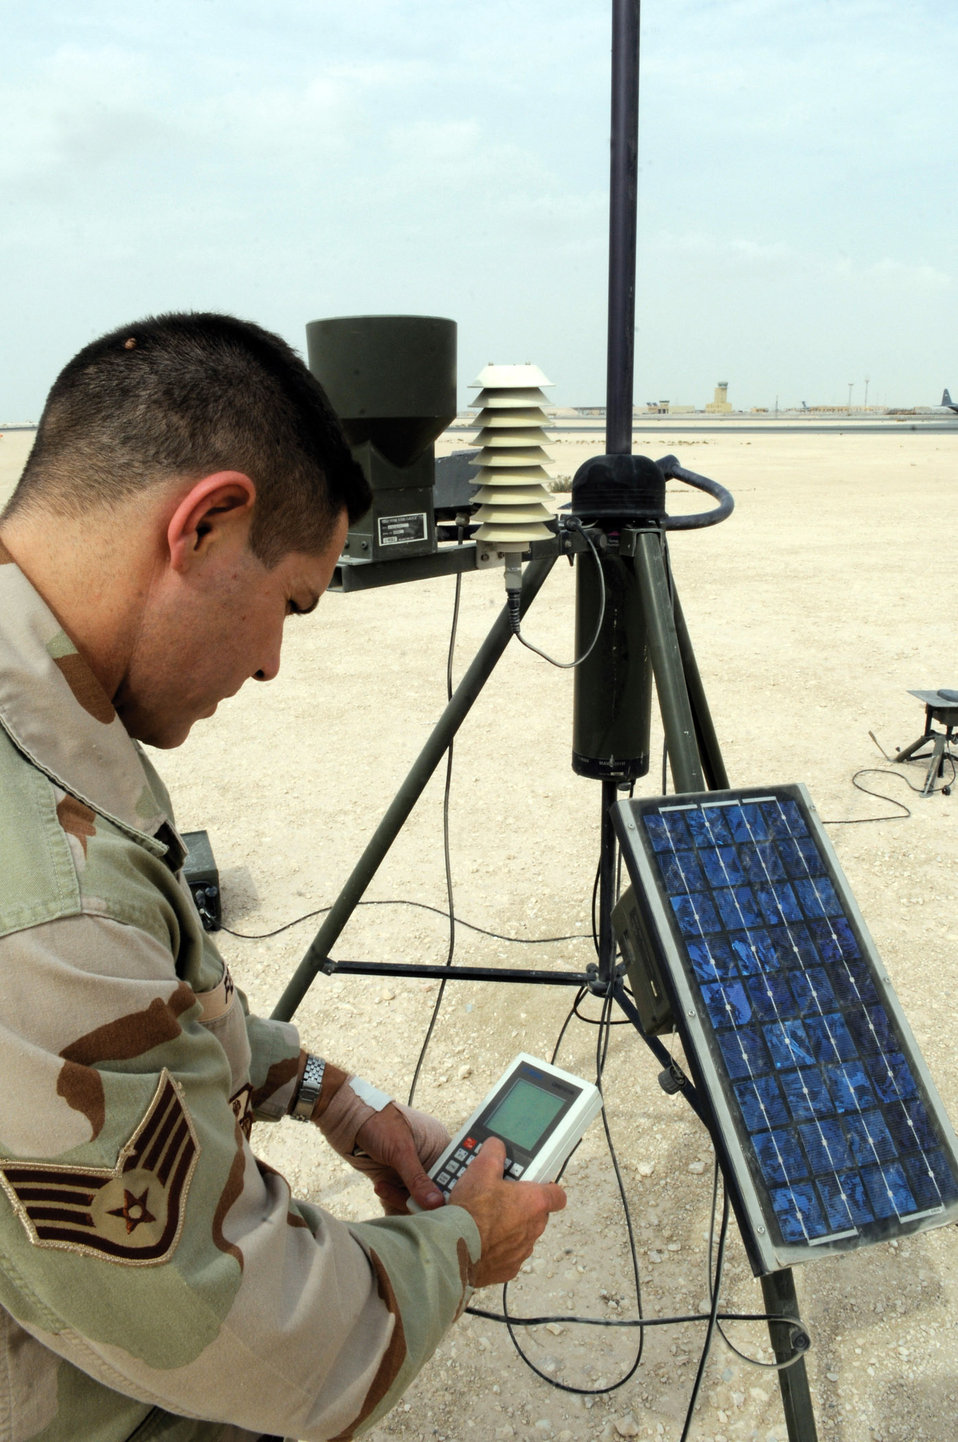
Weather flight forecasts ensure mission efficiency

Staff Sgt. Kevin Fedon, a weather forecaster assigned to the 379th Expeditionary Operations Support Squadron at an air base in Southwest Asia, checks weather readouts, including temperature, wind speed, wind direction and precipitation, at a remote weather sensor. The weather readings are put into a weather model to help predict weather patterns and are used for daily reports to aircrews preparing for missions. Sergeant Fedon is a native of Lincoln, Neb., and is an Air National Guardsman deployed from Offutt Air Force Base, Neb.